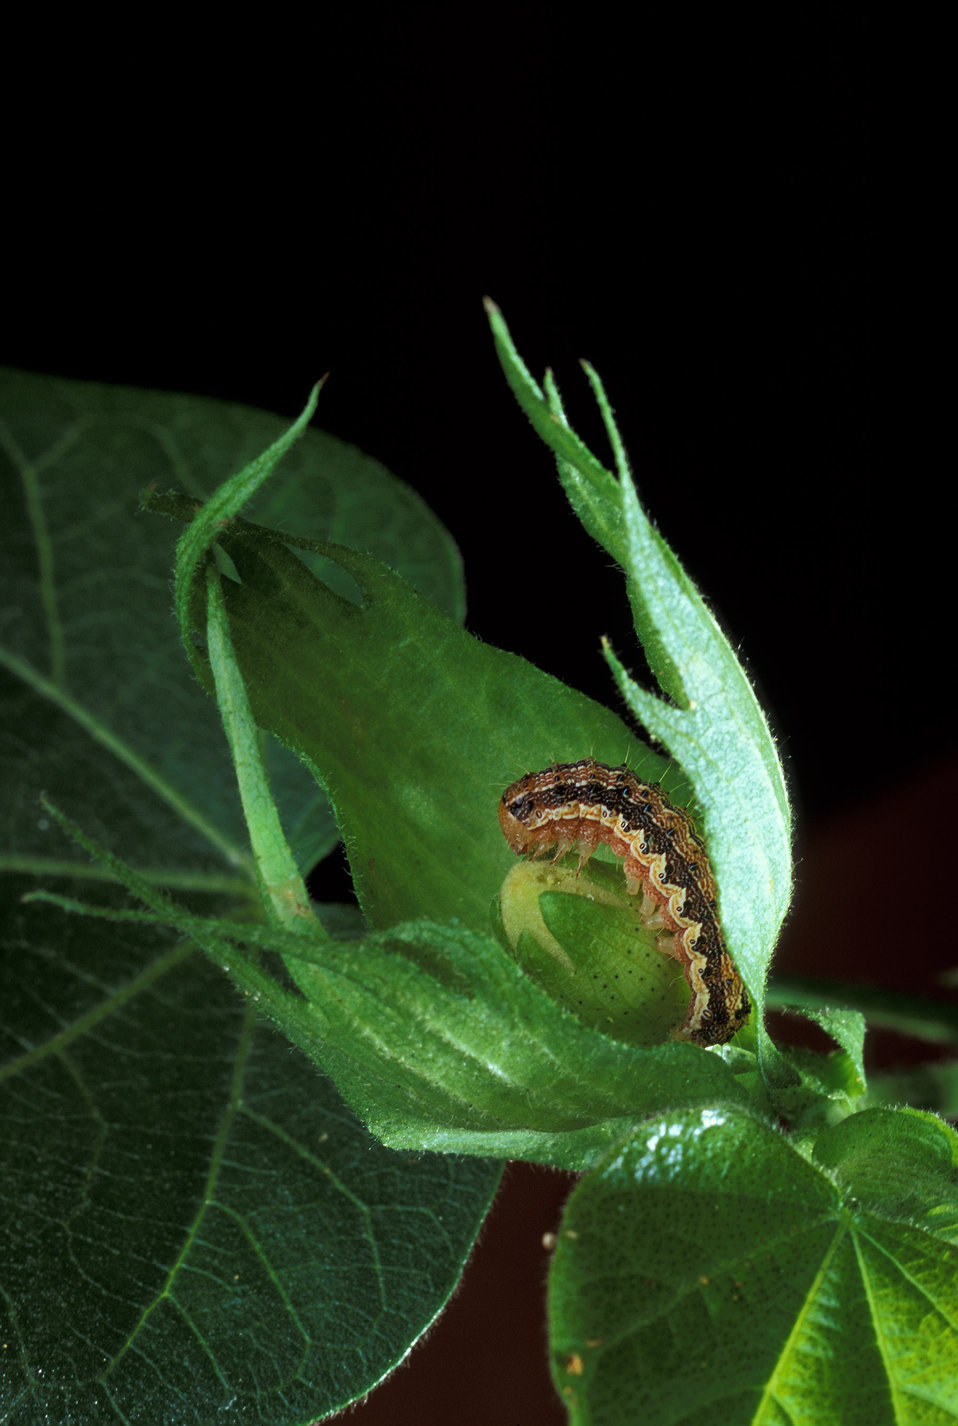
The celery looper virus is being tested as a new biological control against the destructive cotton bollworm by the U.S. Department of Agriculture (USDA) Agricultural Research Service (ARS) and a commercial laboratory.